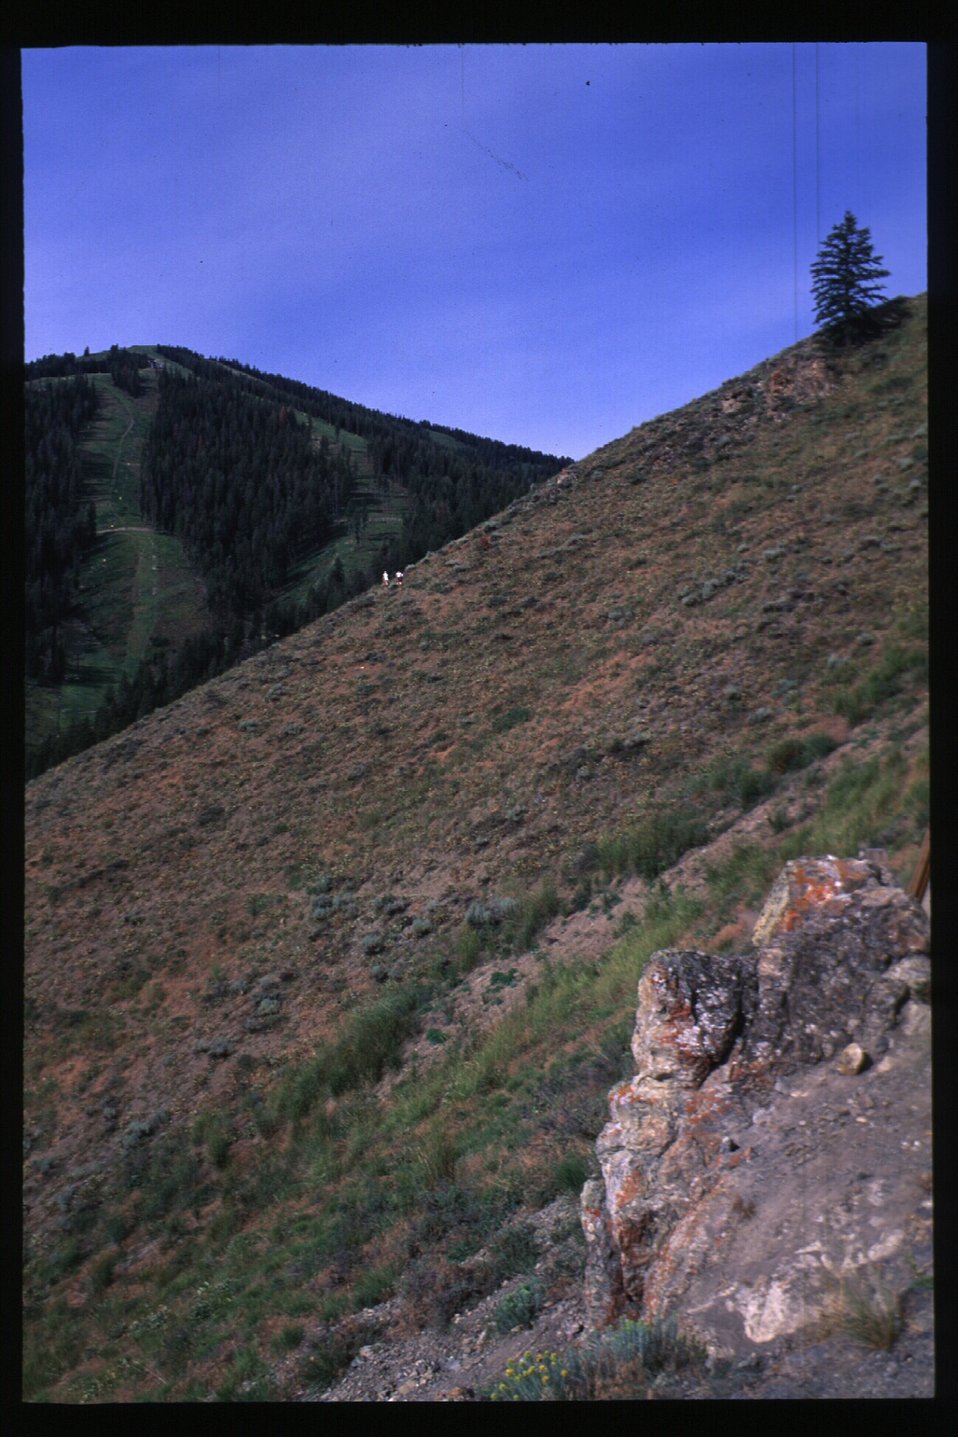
Recreation Scenic Biker Shoshone Field Office USRD Upper Snake River District Bald Mountain Trail Hikers